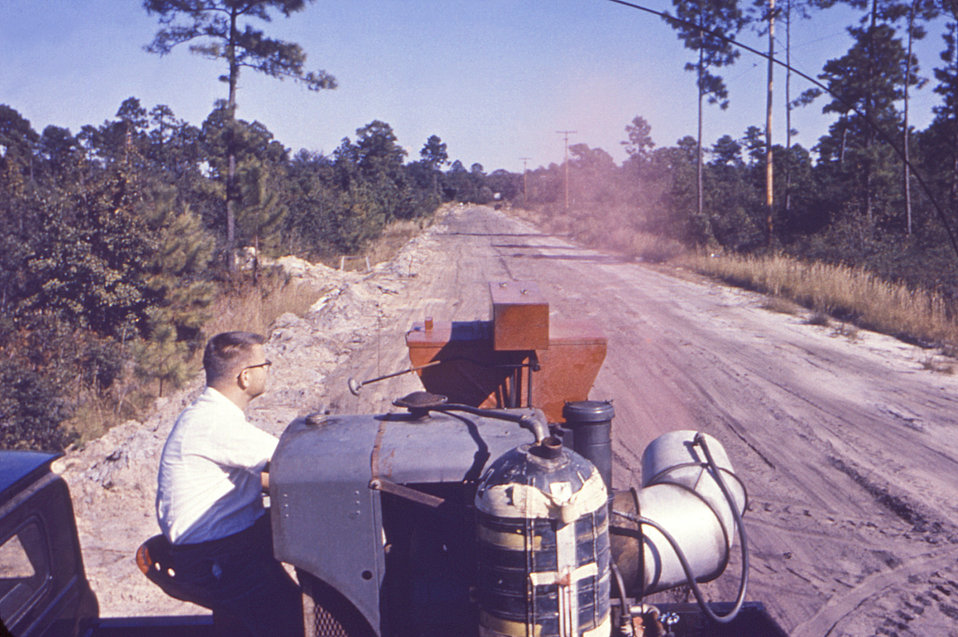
Driving a pick-up truck equipped with a Buffalo turbine blower, this historic 1962 image depicted a public health worker, as he was monitoring the blower's insecticide output.